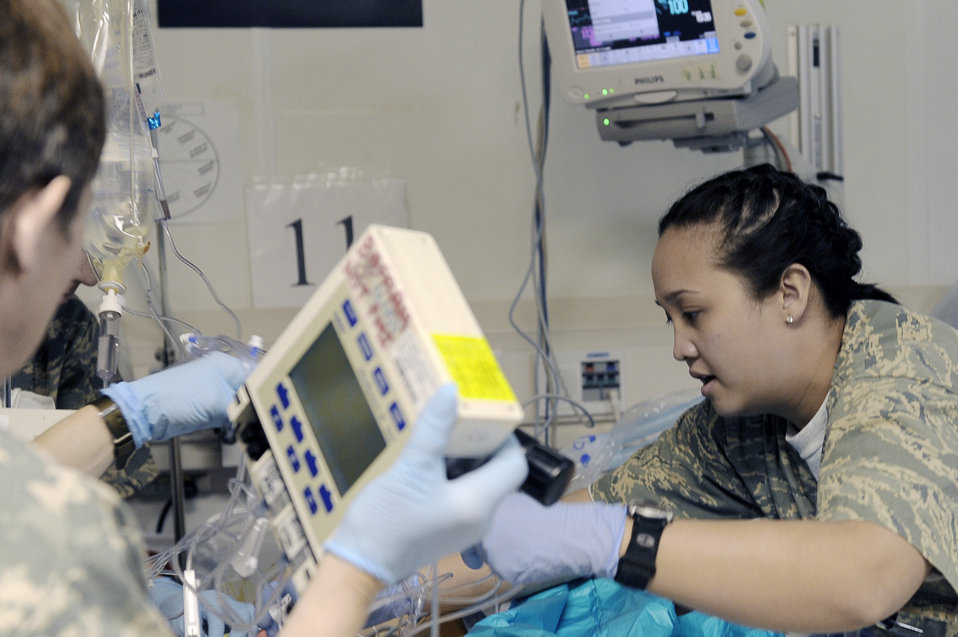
Medical team in Southwest Asia

Senior Airman Jeazell Strait provides medical care for a patent in the intensive care unit May 5, 2010, at the Craig Joint Theater Hospital at Bagram Airfield, Afghanistan. Airman Strait is with the 455th Expeditionary Medical Group/Task Force Medical East deployed from Beale Air Force Base, Calif.